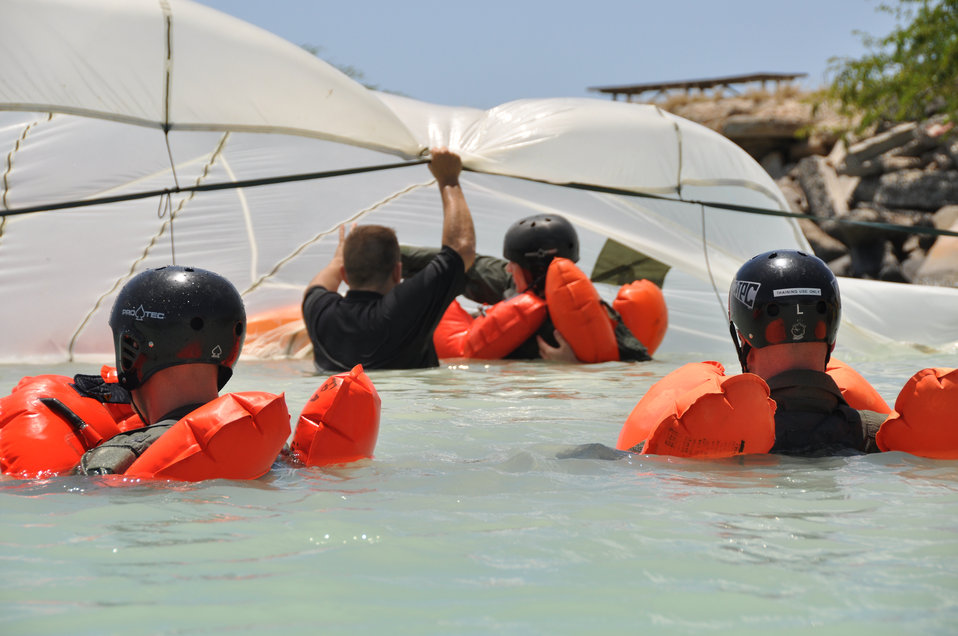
SERE instructors ensure water survival skills

Tech. Sgt. Sherwood Brown briefs an aircrew member on the correct way to swim under a parachute canopy during refresher water survival training April 6 while in the waters adjacent to Hickam Air Force Base, Hawaii. He is an Air Force survival, evasion, resistance and escape specialist assigned to the 15th Operations Support Squadron at Hickam.